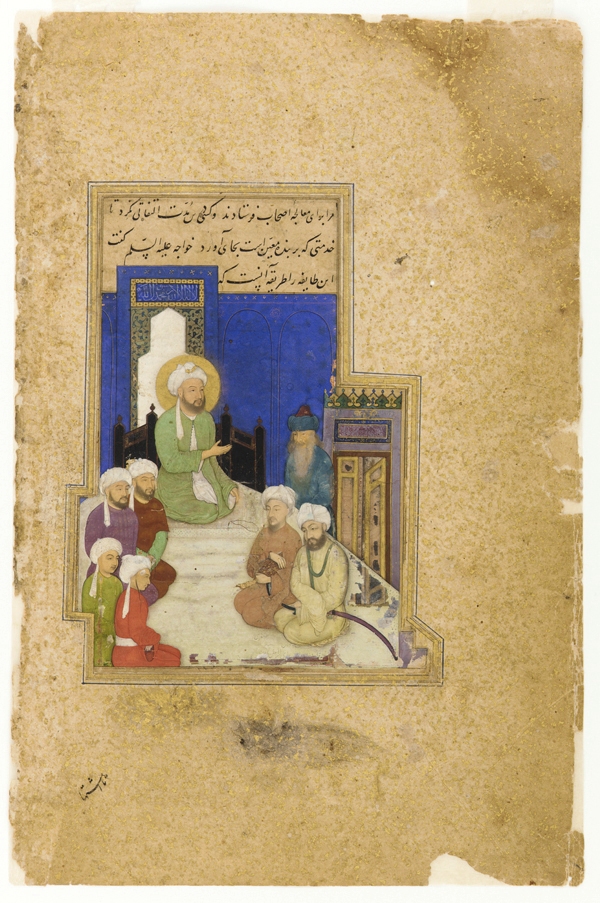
'Abid(attributed) The Prophet and the Persian physician. Folio from a Gulistan (Rosegarden) by Sa'di. Text dated 1468, paintings repainted ca. 1645, Freer and Sackler Gallery, Washington